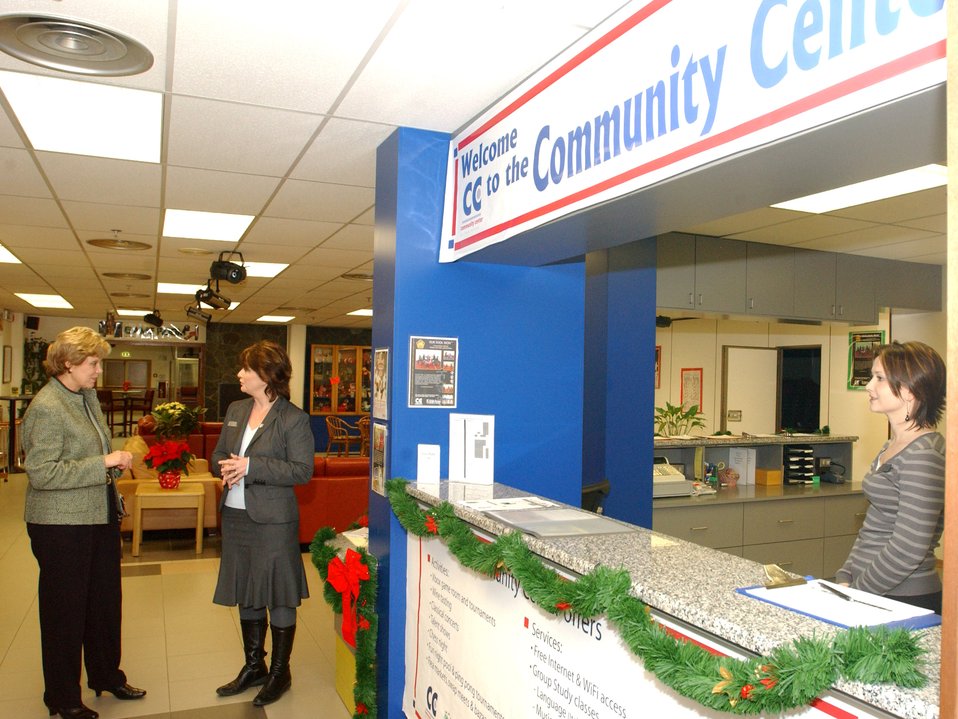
Caring for Airmen and their families

Barbara Wynne visits with employees Dec. 5 at the community center at Aviano Air Base, Italy. Secretary of the Air Force Michael W. Wynne and his wife are visiting with Airmen to get an orientation of the 31st Fighter Wing. Secretary Wynne is responsible for the affairs of the Department of the Air Force, and ensures the Air Force can meet its current and future operational requirements.